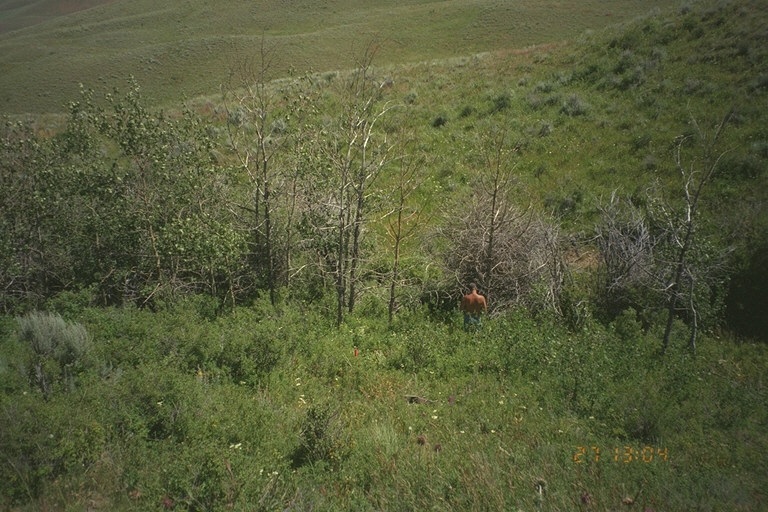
Riparian area Public Lands Salmon Field Office UCSC Upper Columbia Salmon Clearwater District